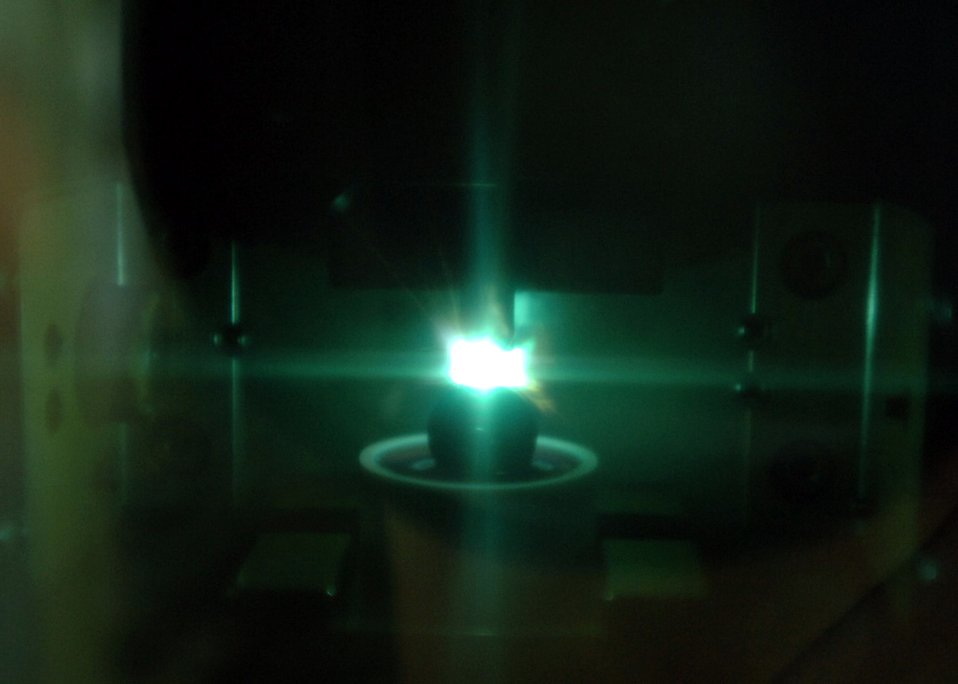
Checking the burn

A 438th Expeditionary Aircraft Maintenance Squadron spectrometer burns A-10 Thunderbolt II engine oil to measure for impurities that would signify wear and tear to the aircraft's engines at Al Asad Air Base, Iraq. Impurities are carefully measured by parts per million to ensure the aircraft is ready to perform combat missions.